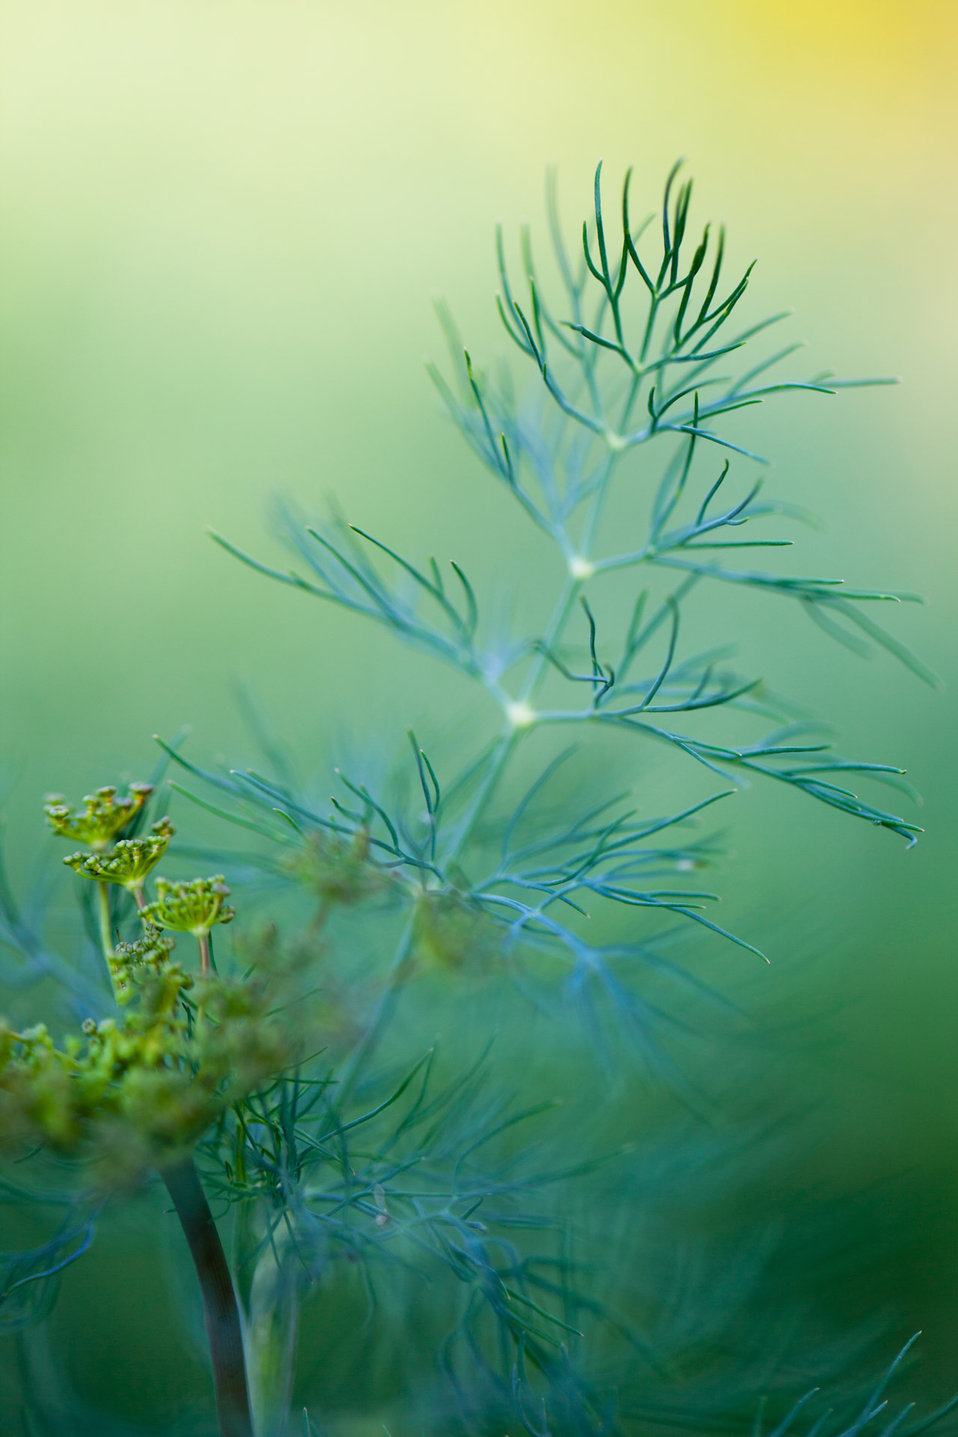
Dill

Macro photo of a green dill.